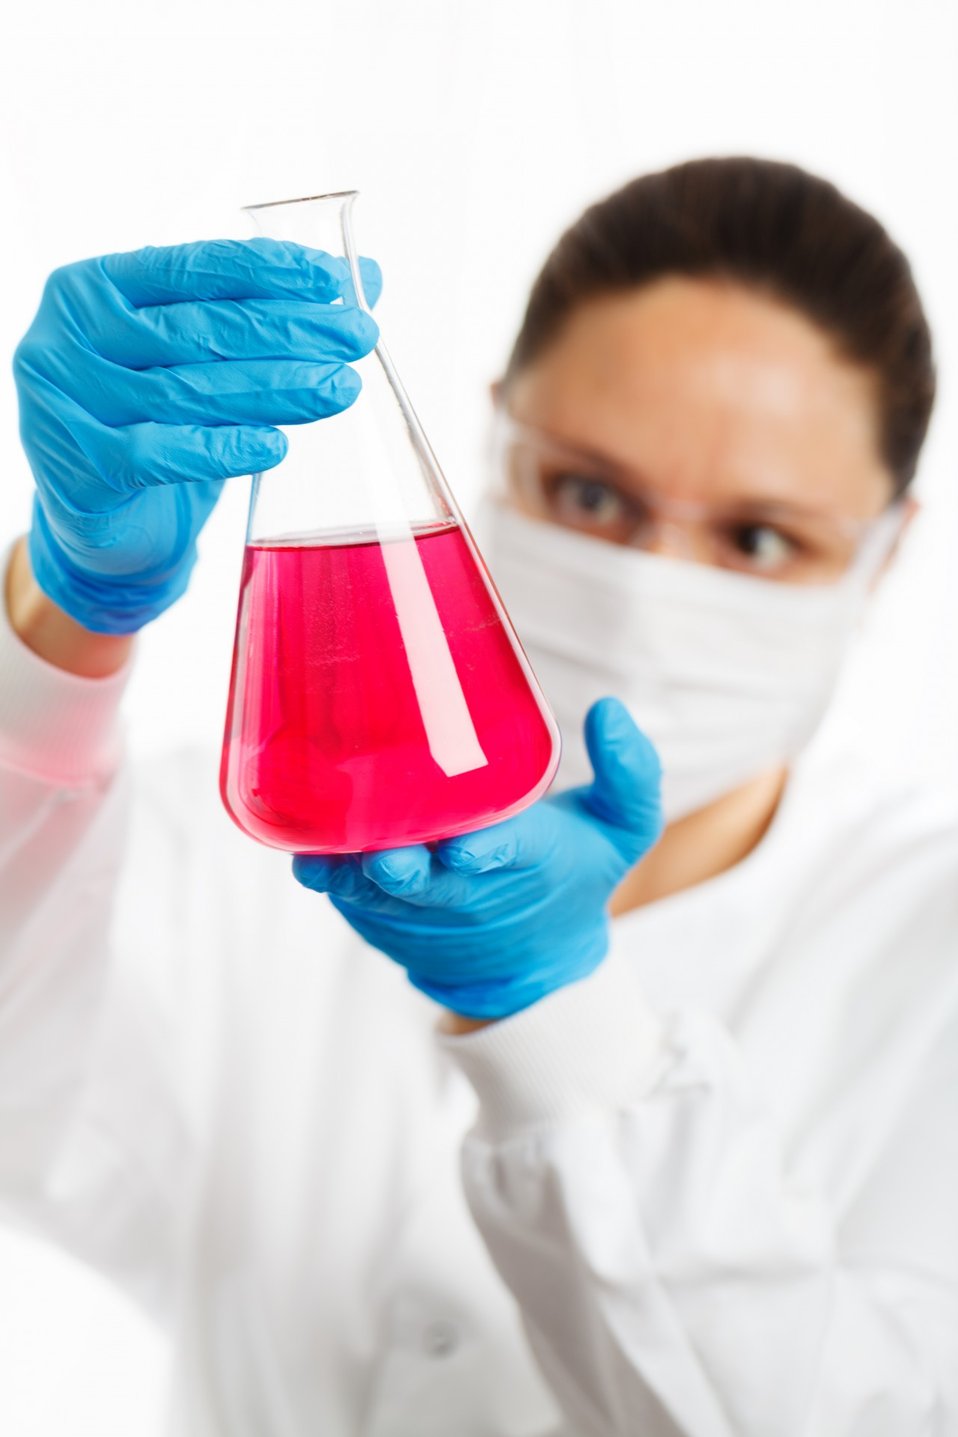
Scientist with erlenmeyer flask

Scientist holding an erlenmeyer flask with pink liquid.